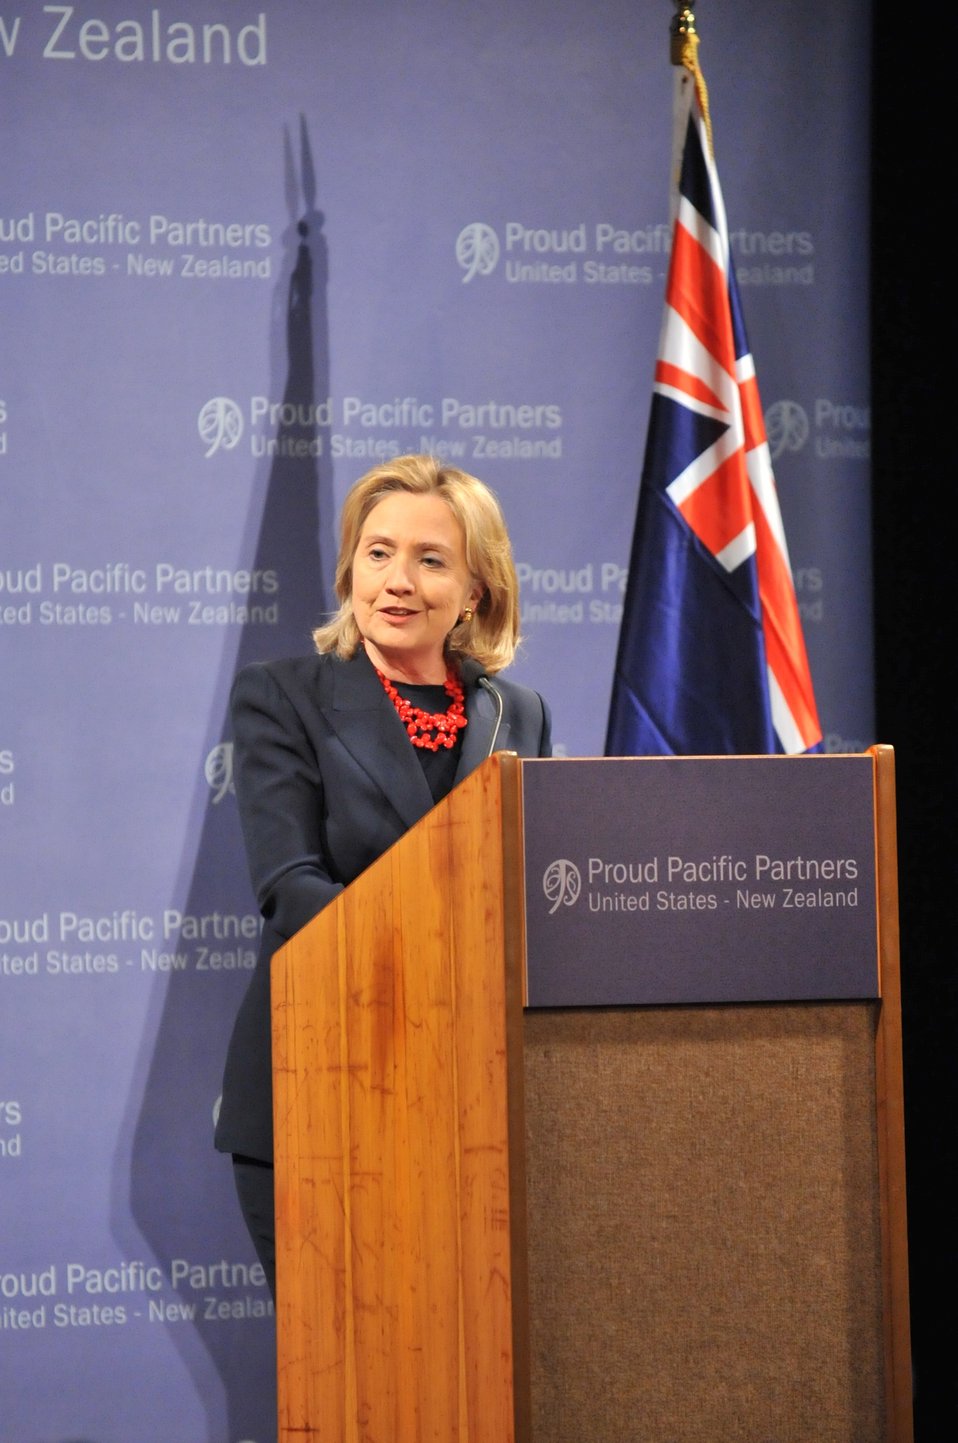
Secretary Clinton Holds a Town Hall in Christchurch

U.S. Secretary of State Hillary Rodham Clinton holds a town hall in Christchurch, New Zealand, on November 5, 2010.